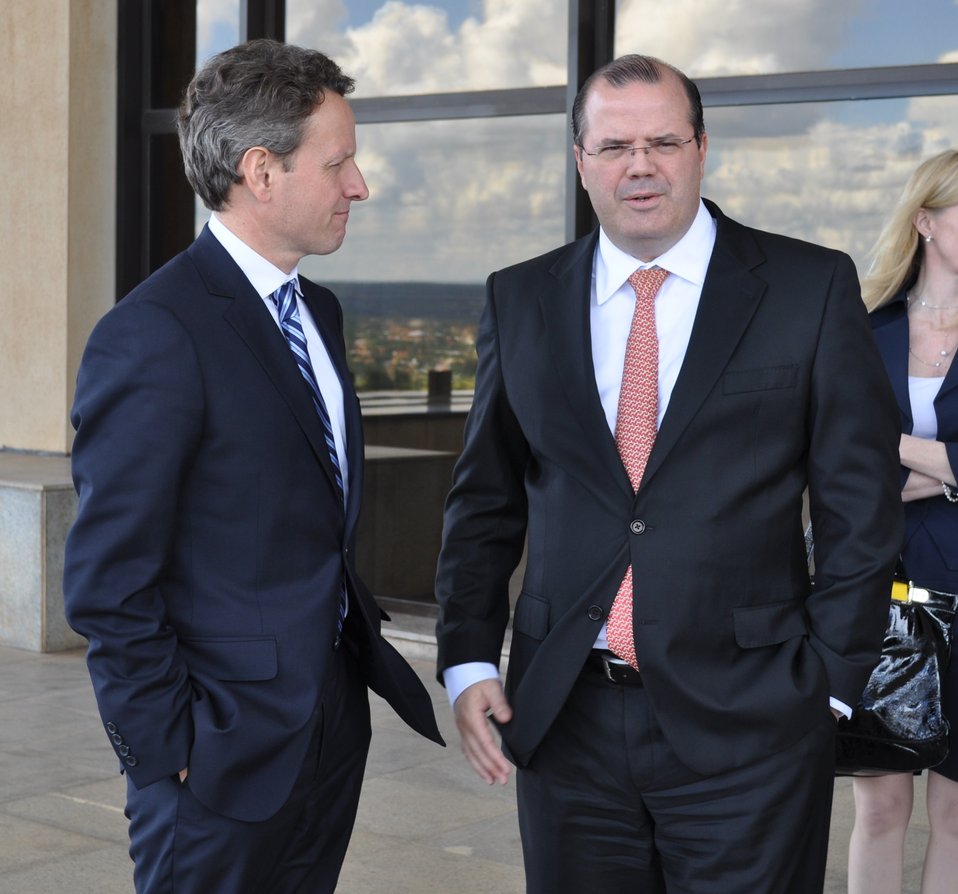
Secretary Geithner Travels to Brazil, 02/07/2011

Secretary Geithner and Brazilian Central Bank Governor Alexandre Tombini before their bilateral meeting.